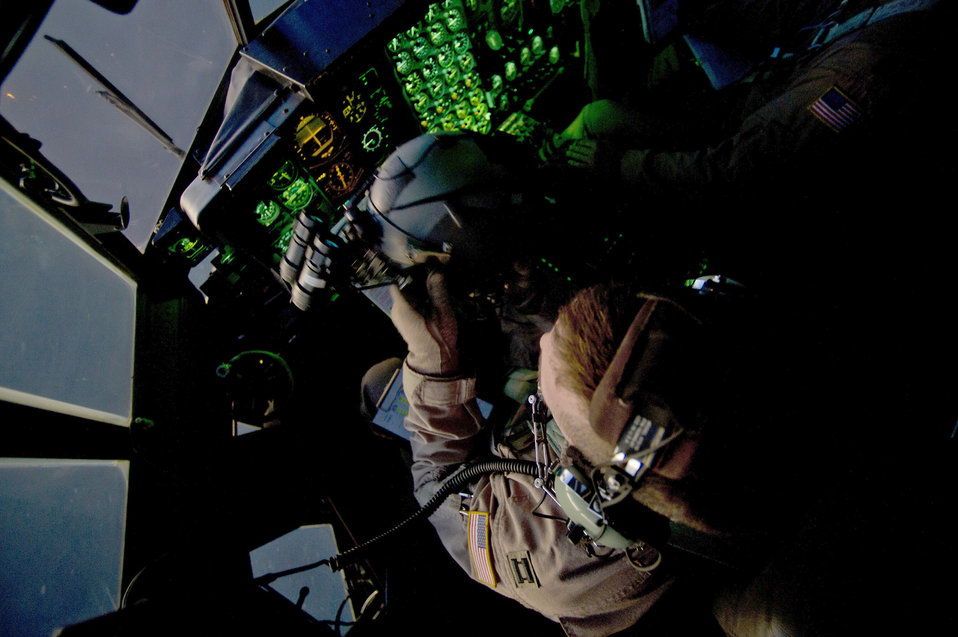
C-130 Aircrew

Capt. Richard Konopczynski prepares to put on his helmet and night vision goggles as he flies an air transport mission aboard a C-130 Hercules in support of Operation New Dawn. Konopczynski is a pilot assigned to the 746th Expeditionary Airlift Squadron. He is a reservist deployed from the 914th Airlift Wing in Niagara Falls, N.Y.